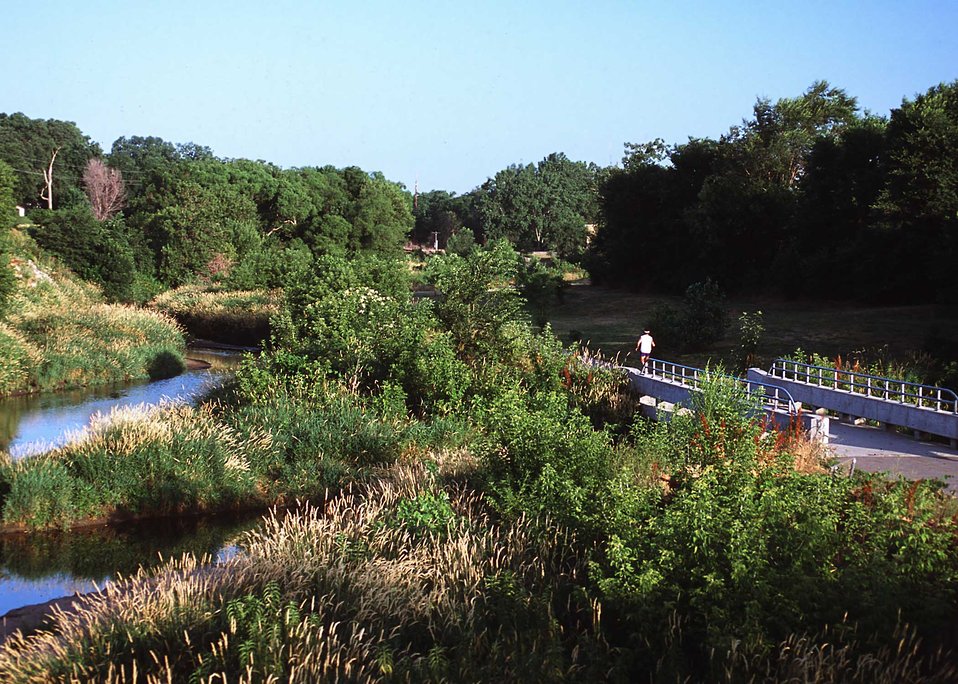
Grasses and trees function as a conservation buffer in a greenbelt along a small stream in a suburb of Des Moines, Iowa.